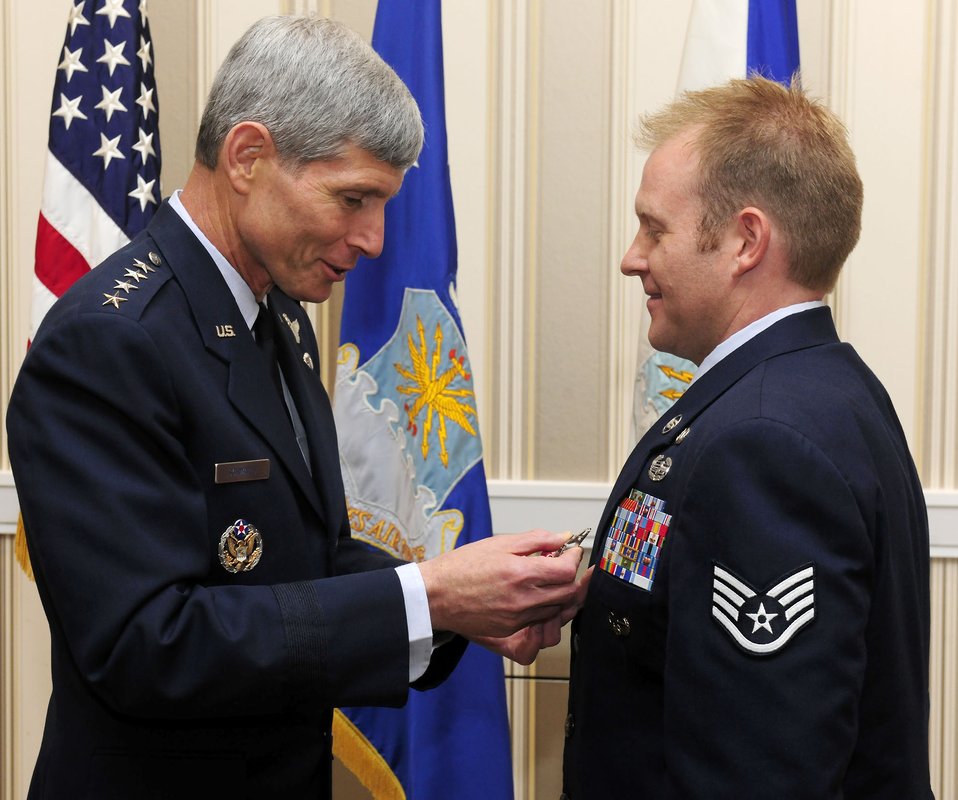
Airman receives Bronze Star with Valor at AFA

Air Force Chief of Staff Gen. Norton Schwartz pins the Bronze Star with Valor on Staff Sgt. Kenneth I. Walker III during the Air Force Association's Air and Space Conference and Technology Exposition Sept. 14, 2010, at National Harbor in Oxon Hill, Md. Sergeant Walker earned the award for heroism displayed during ground combat in Ghosleck Valley, Afghanistan.